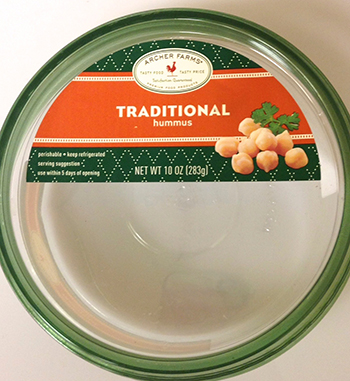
RECALLED – Hummus and dip products

May 19, 2014 – Product Recall – Lansal, Inc. Voluntarily Recalls Hummus & Dip Products Due to Possible Health Risk.